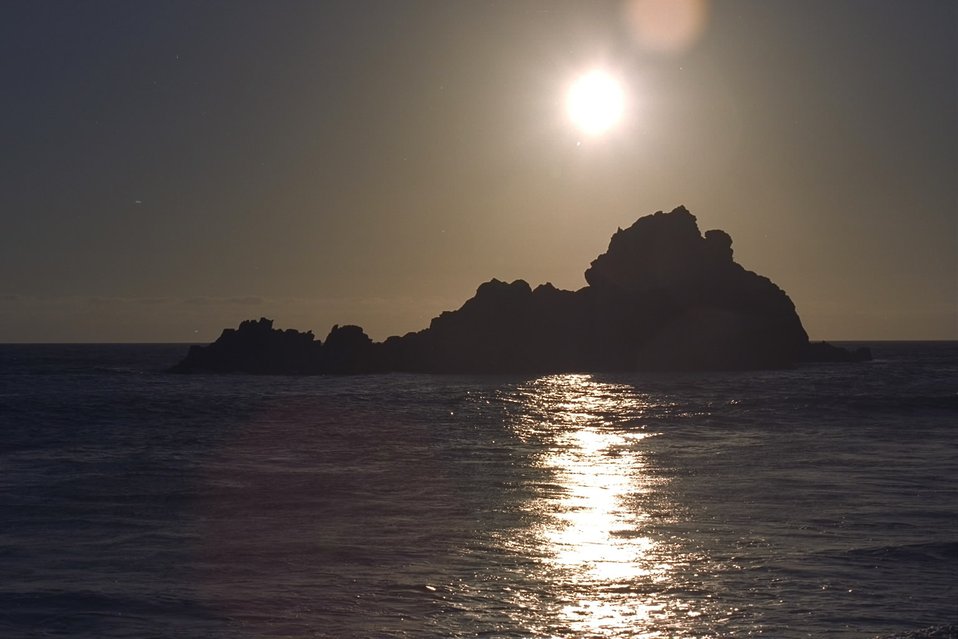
Sunset California coastal national monument